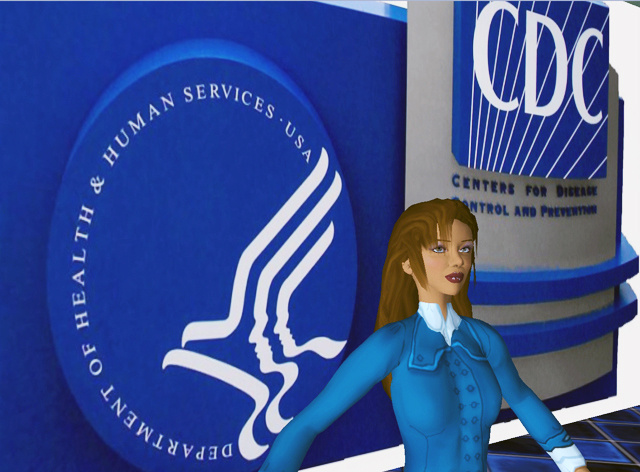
This computer-generated image depicts Hygeia Philo, the CDC's lead avatar in the virtual world of Second Life. This was the third design stage of the avatar. Customizing an avatar's appearance is a key aspect to community acceptance. This image shows both a more corporate look to the avatar, as well as a real world image of the CDC's marquee, while placing them into the virtual context in this visual experiment. Dr. John Anderton designed Hygeia Philo, whose name is based on the Greek meaning 'lover of health', to be the modern muse of health, serving as lead health spokesperson and health educator in this new virtual space. See PHIL 10002, 10005, 10007, 10008, 10011, 10012, 10013, 10014, 10015, and 10016 for additional images of Ms. Philo.